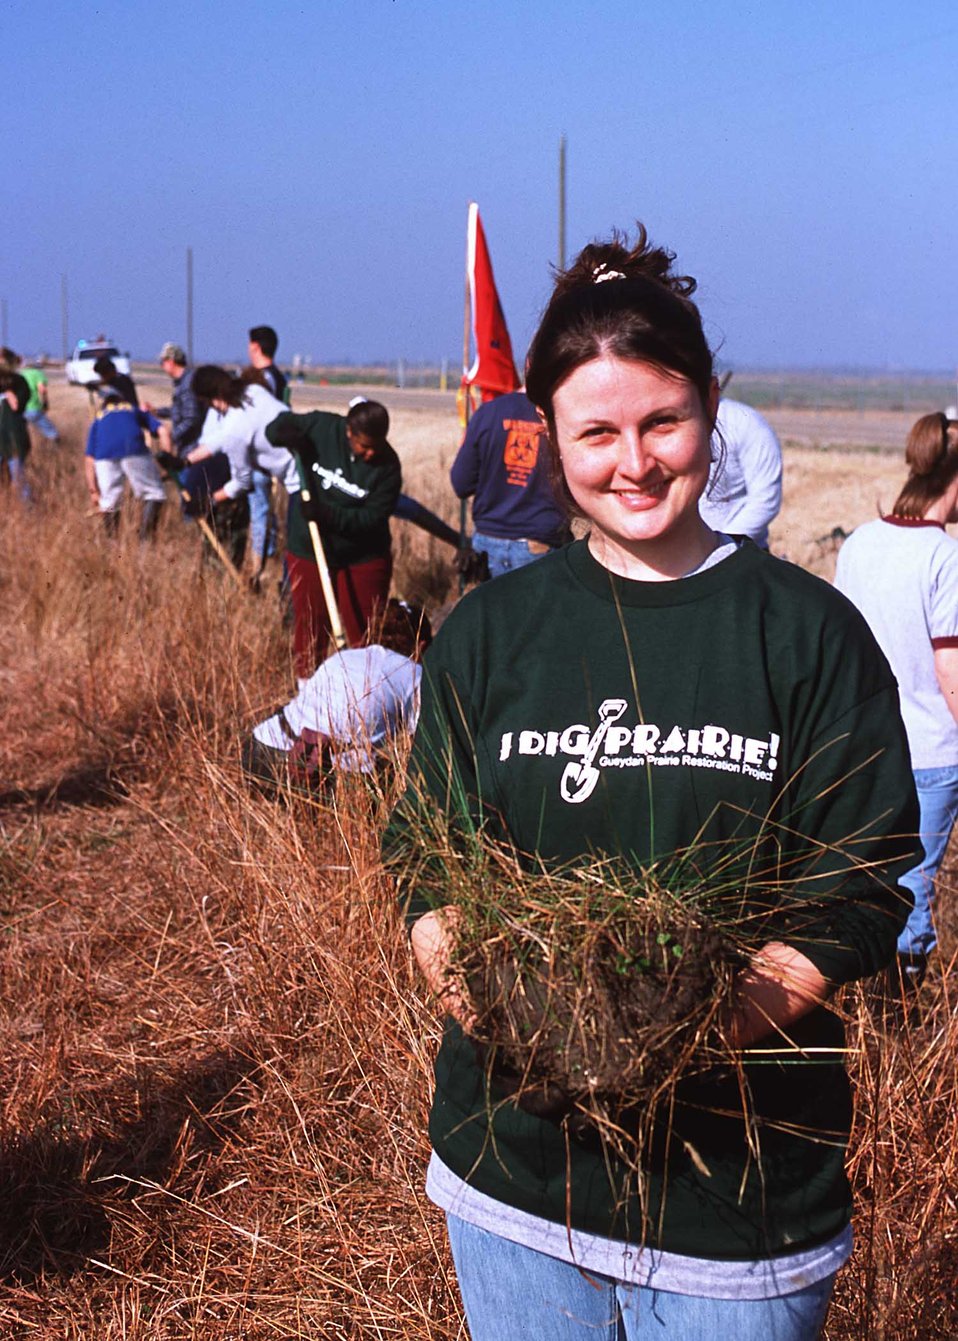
Earth team volunteers of NRCS help transplant native prairie plants from a roadside near Gueydan, Louisiana, to a restored wetland nearby.